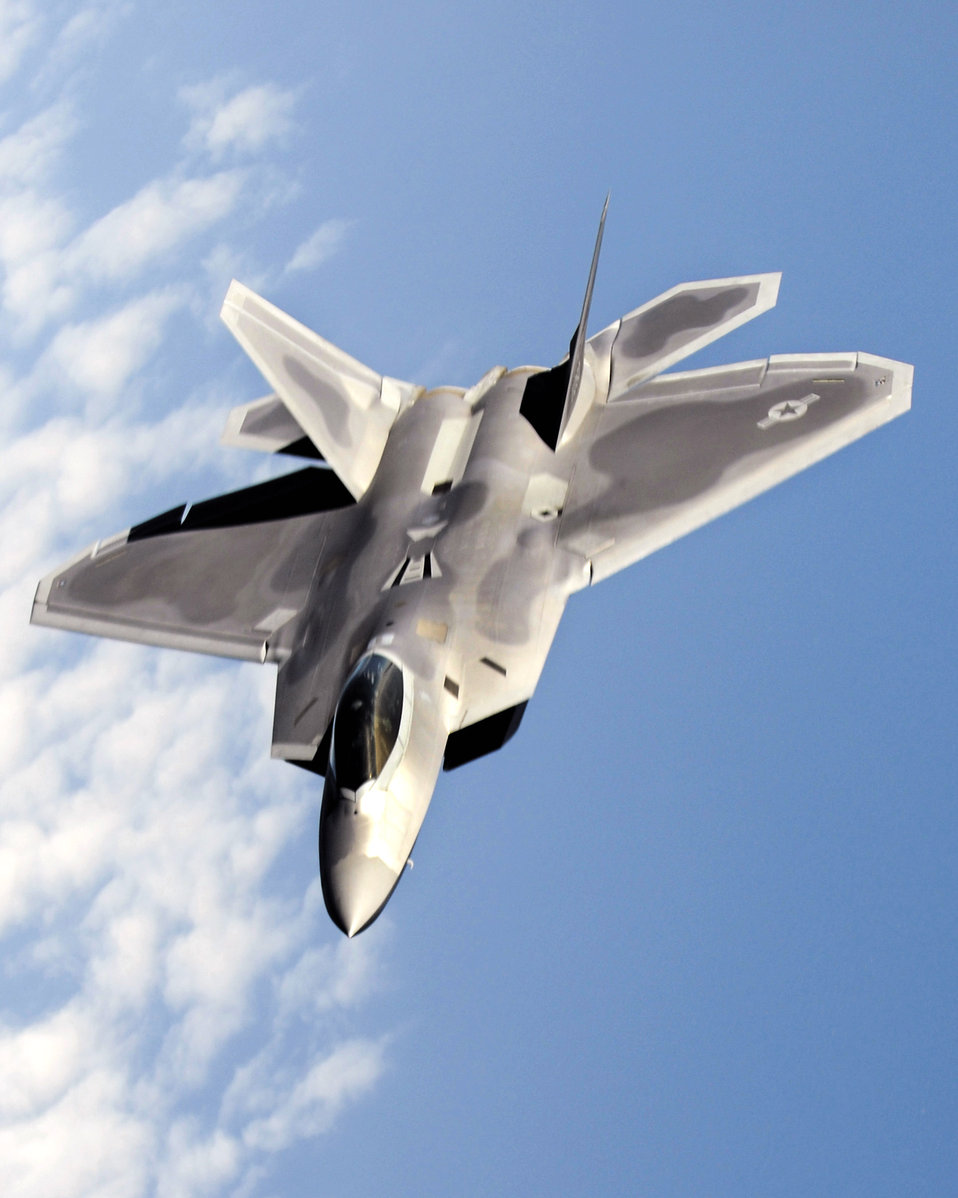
Air Force, Navy pilots train together over Okinawa

An F-22 Raptor flies above Kadena Air Base, Japan, during an air refueling mission Jan. 23. The F-22 is deployed from the 27th Fighter Squadron at Langley Air Force Base, Va., in support of U.S. Pacific Command.